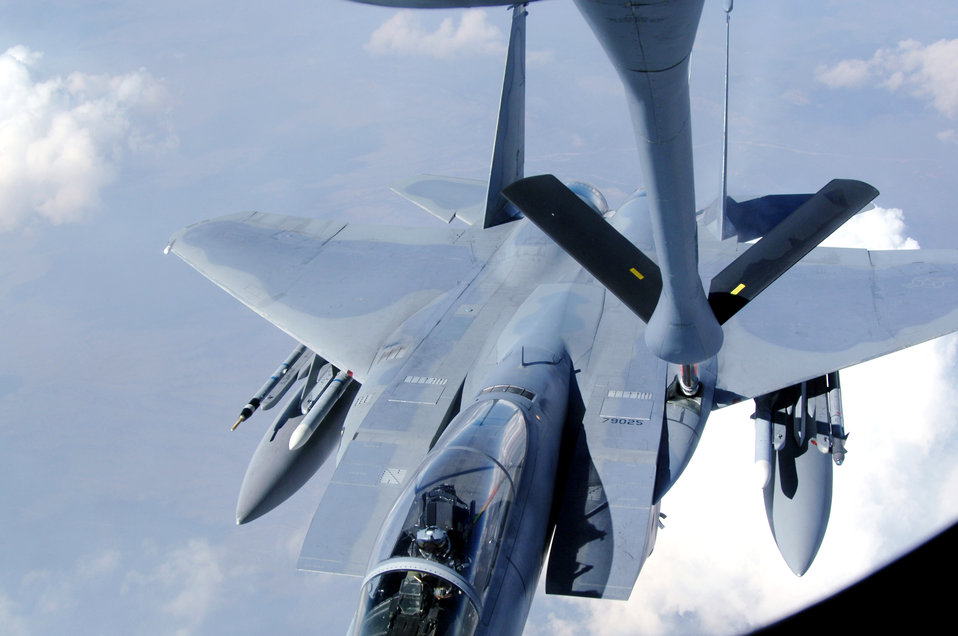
Refuelin' at the Flag

An F-15 Eagle from Kadena Air Base, Japan, pulls away from a KC-135 Stratotanker after refueling during Red Flag, a two-week exercise that tests and trains servicemembers in real-time combat situations at Nellis Air Force Base, Nev. Red Flag is conducted over the Nevada Test and Training Range, which has more than 2.9 million acres of airspace. The KC-135 is based at MacDill AFB, Fla.